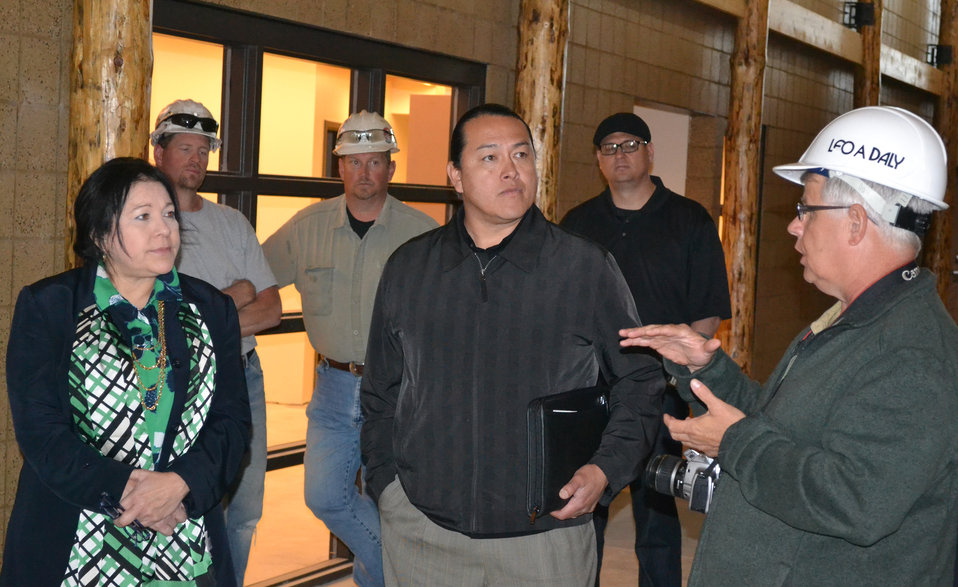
U.S. Department of Agriculture (USDA), Rural Housing Service (RHS) Administrator Tammye Treviño visit to South Dakota to co-chair a StrikeForce meeting in Sisseton, SD, attend a Housing Fair, and visit homes and facilities financed by USDA, Rural Development (RD) as part of National Homeownership Month, on Monday, June 3, 2013.